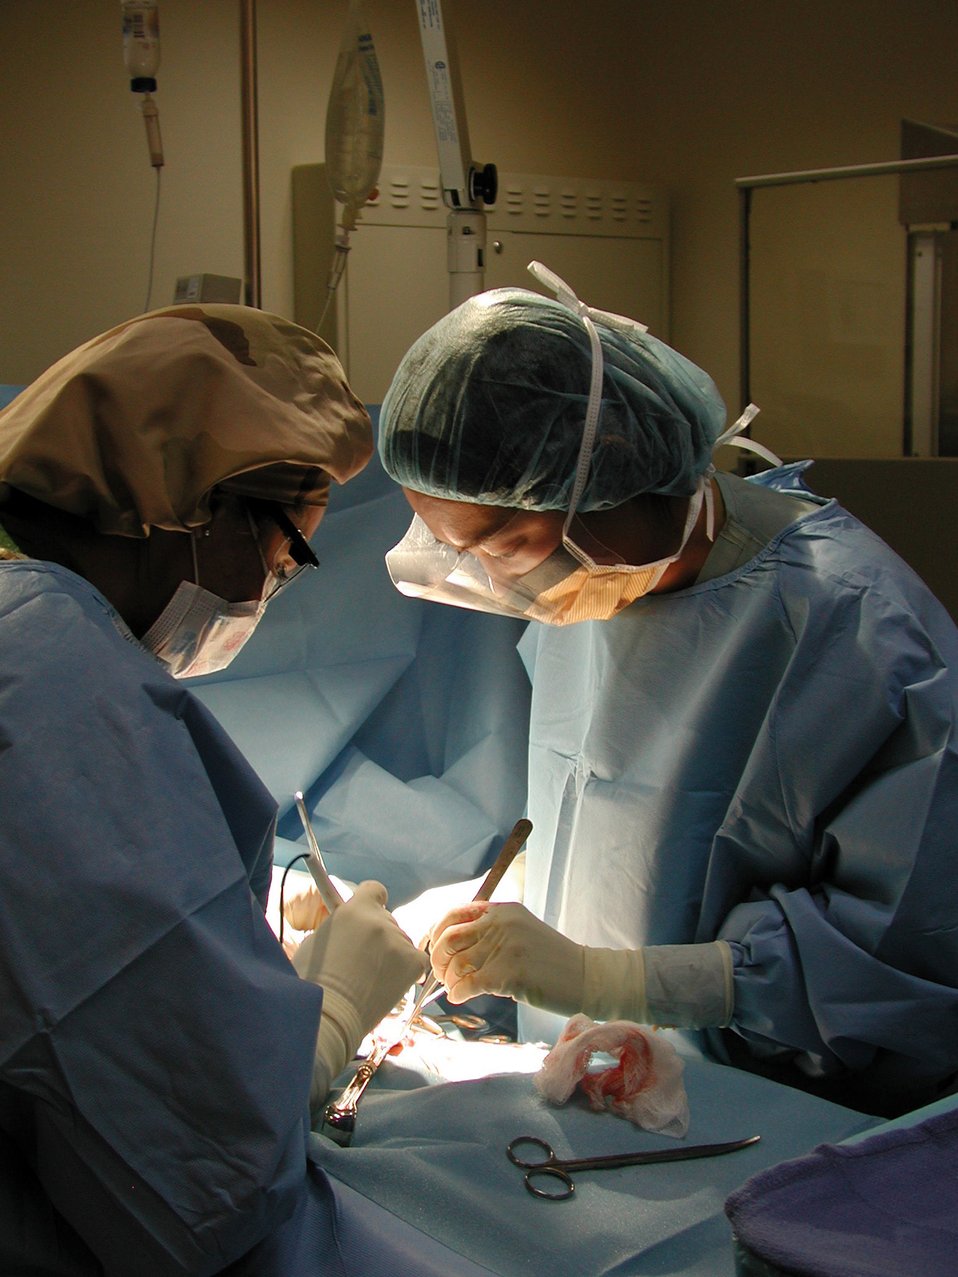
Airman Manual saves life

SOUTHWEST ASIA (AFPN) -- Maj. (Dr.) Crystine Lee and her team perform surgery on Staff Sgt. Stephen Jones leg. The sergeant developed Necrotizing Fasciitis, also known as flesh eating bacteria. This type of infection is fatal if not treated immediately and because of Sergeant Jones' pre deployment training, he knew to seek help.